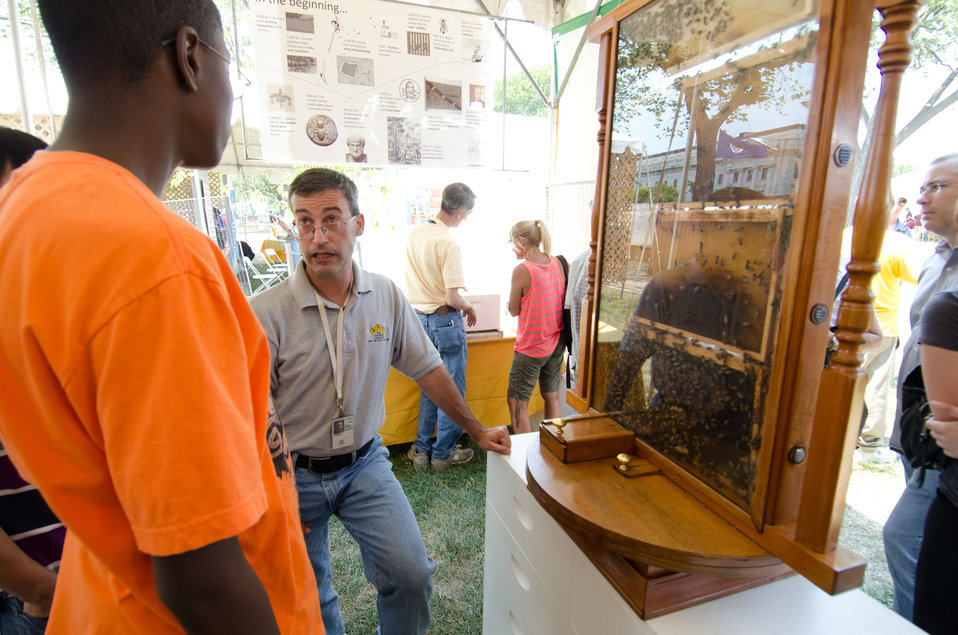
Agricultural Research Service Biological Technician Andrew Ulsamer talks to a visiting student about the live bee colony display at a tent devoted to bee research and honey production at 2012 Smithsonian Folklife Festival, on Thursday, June 28, 2012 on the National Mall in Washington, D.C. One of the three themes this year is “Campus and Community.” It celebrates the 150 years of the USDA and the Land-Grant University System. The U.S. Department of Agriculture (USDA) and the Land-Grant system extend education across the country, contributing to American agriculture success and rural prosperity. “Campus and Community” has demonstrations, discussions, hands-on activities, and entertainment to that showcase the many ways that this partnership works to improve American agriculture and rural life.